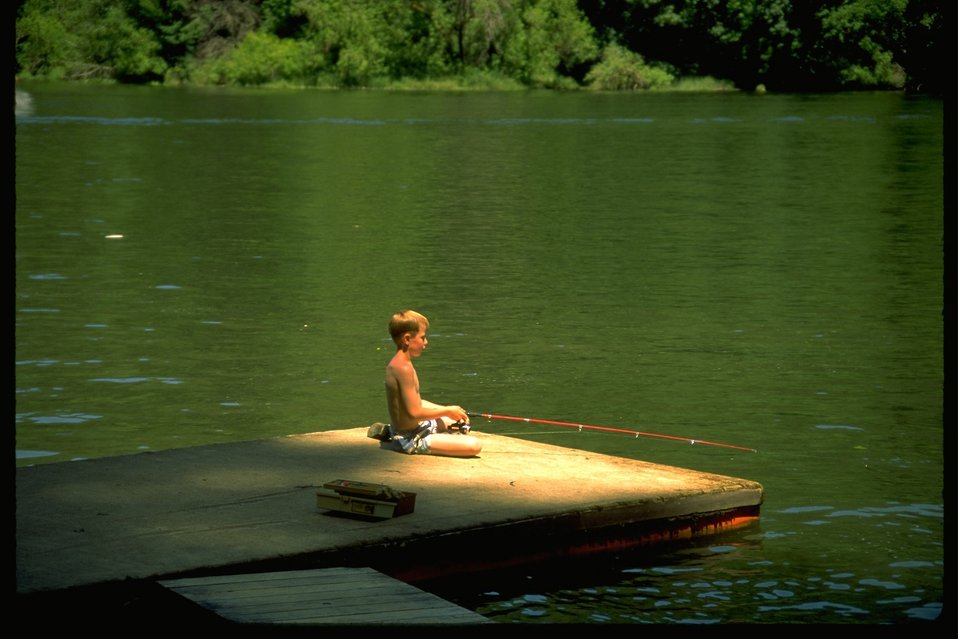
Loon Lake fishing: sitting on the dock.